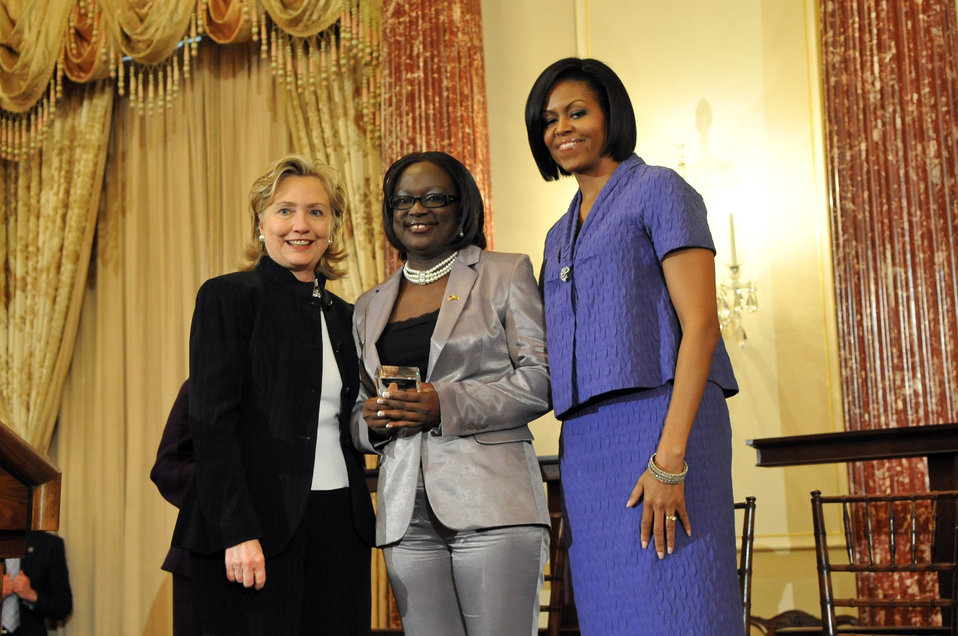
Secretary Clinton With First Lady Michelle Obama and Jestina Mukoko

U.S. Secretary of State Hillary Clinton and First Lady Michelle Obama stand with Honoree Jestina Mukoko of Zimbabwe at the 2010 International Women of Courage Awards at the U.S. Department of State, Washington, D.C. March 10, 2010.